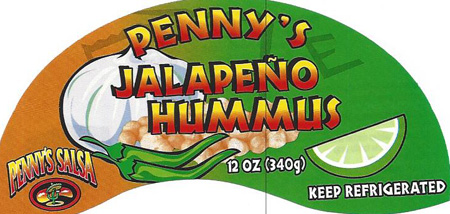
RECALLED – Hummus

July 16, 2013 – Product Recall – Hagee Foods Inc. dba Penny's Salsa Inc. Recalls Hummus Products Because of Possible Health Risk.